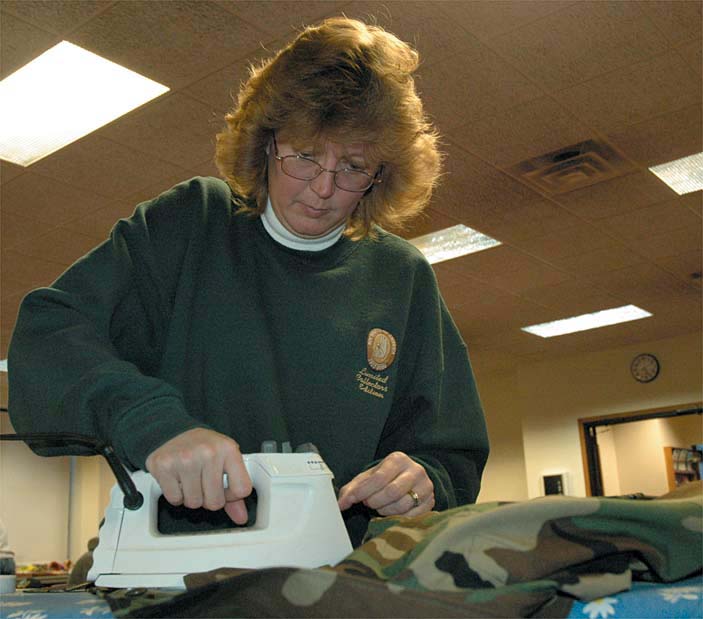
Sew what?

MINOT AIR FORCE BASE, N.D. -- Lynn Heald irons a battle dress uniform before sewing stripes on the sleeves during a monthly